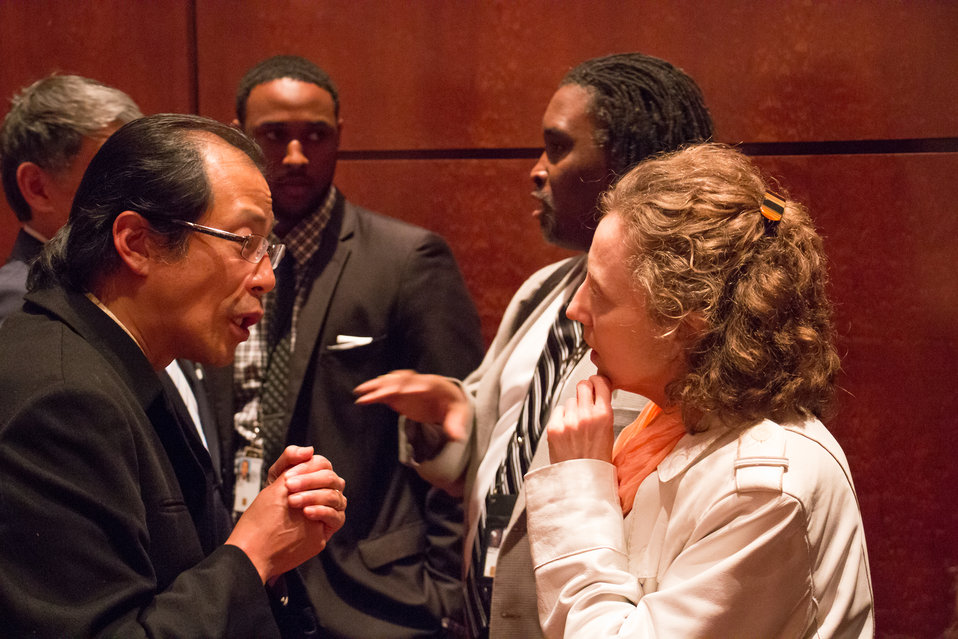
VHAP Launch (441 of 511)